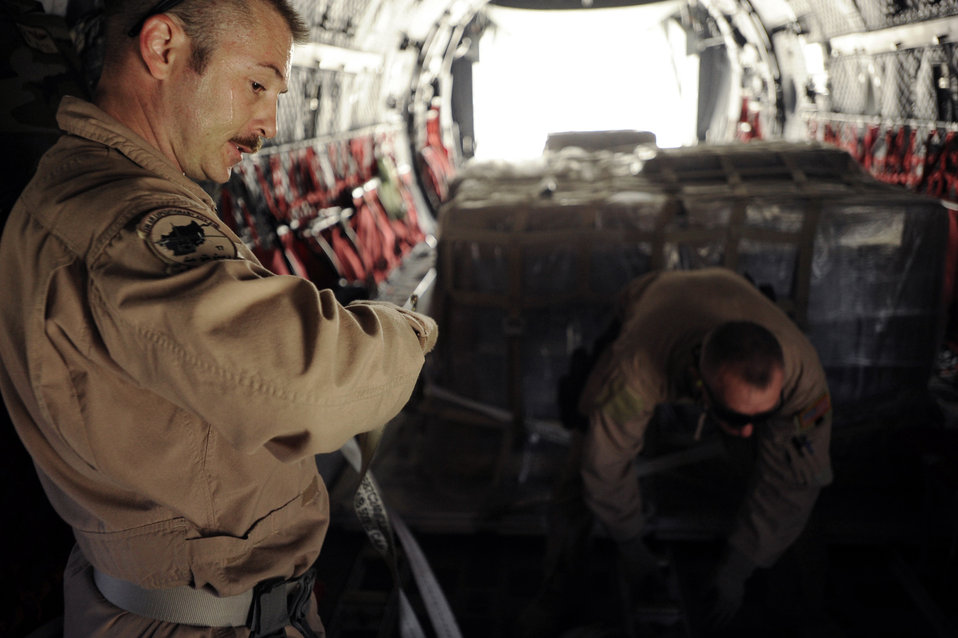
Operation Enduring Freedom

Master Sgt. Chris Beckwith and Senior Master Sgt. Mike Crews secure all loose cargo in a C-27 Spartan prior to takeoff for a mission May 15, 2010, at Kabul International Airport, Afghanistan. Sergeant Beckwith and Sergeant Crews are C-27 loadmaster advisers assigned to the 538th Air Expeditionary Advisory Squadron.